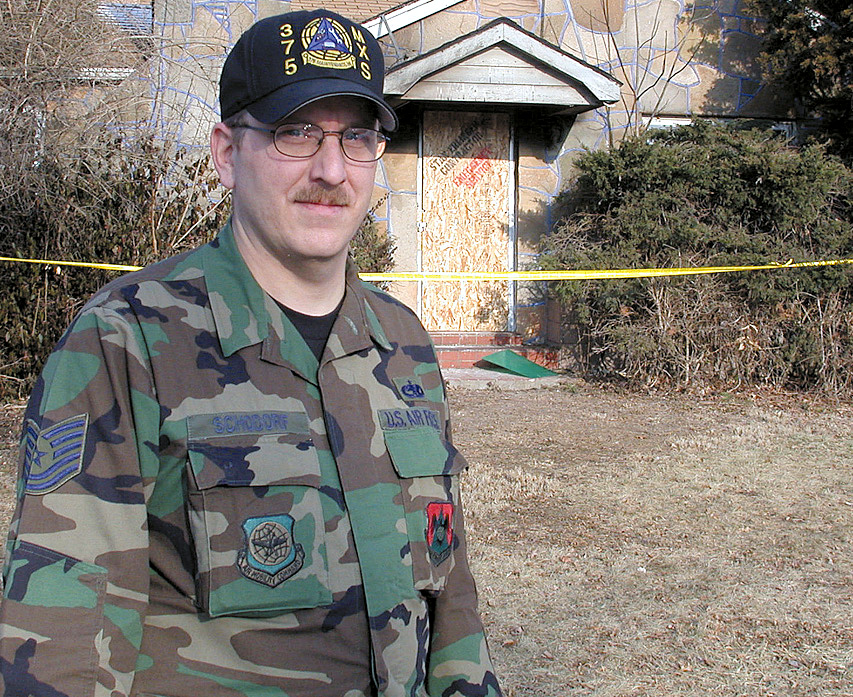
Heroes rescue strangers

SCOTT AIR FORCE BASE, Ill. -- Tech. Sgt. Tim Schodorf was driving with his wife in their neighborhood when he spotted smoke coming from this house. Inside, an elderly woman was having trouble getting out. Schodorf ran in and helped her to safety. He is assigned to the 375th Maintenance Squadron at Scott Air Force Base, Ill.